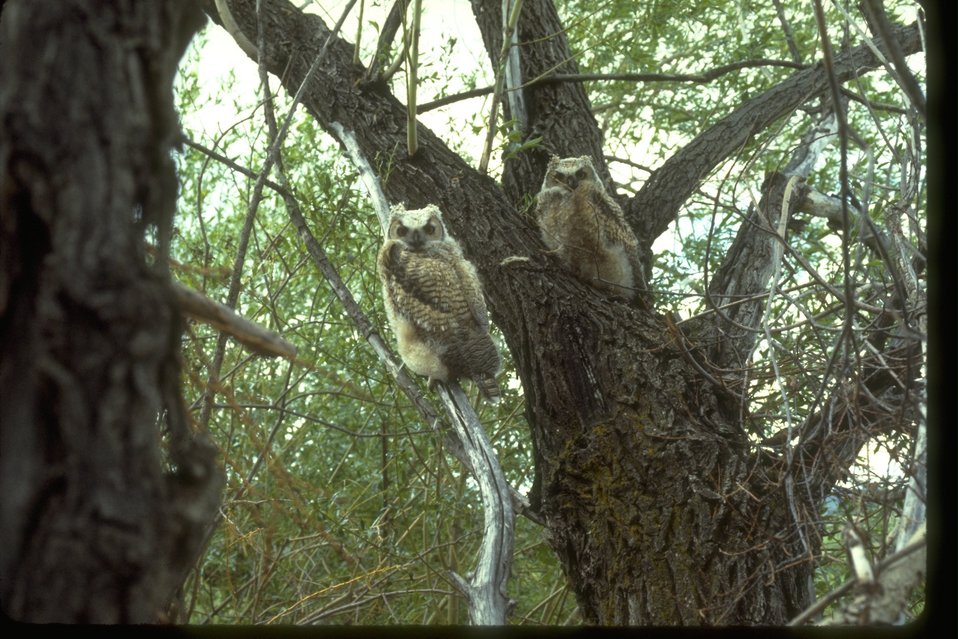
Great Horned Owls sitting in a tree.